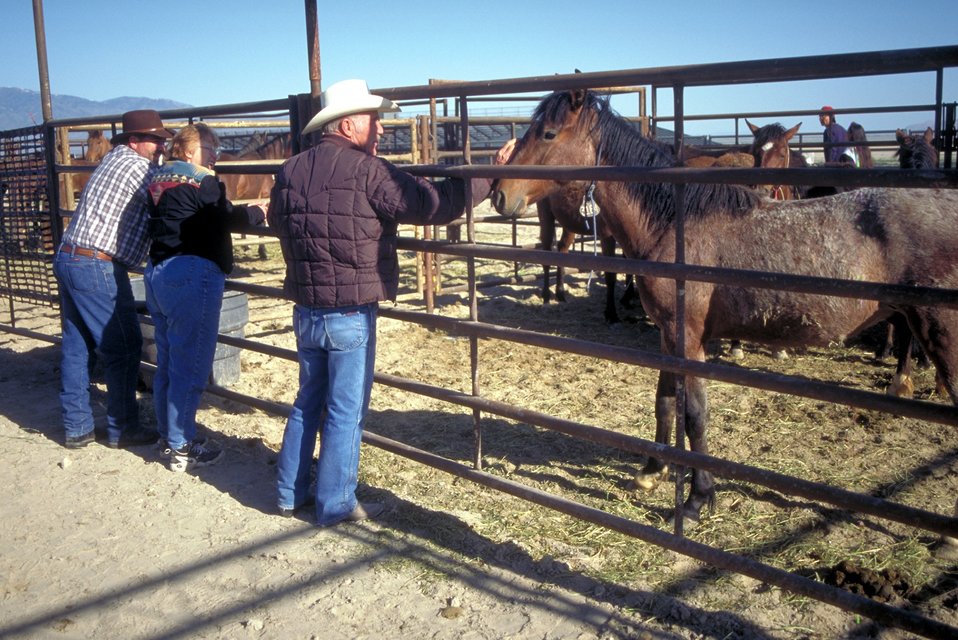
Utah Annual Wild Horse Festival.